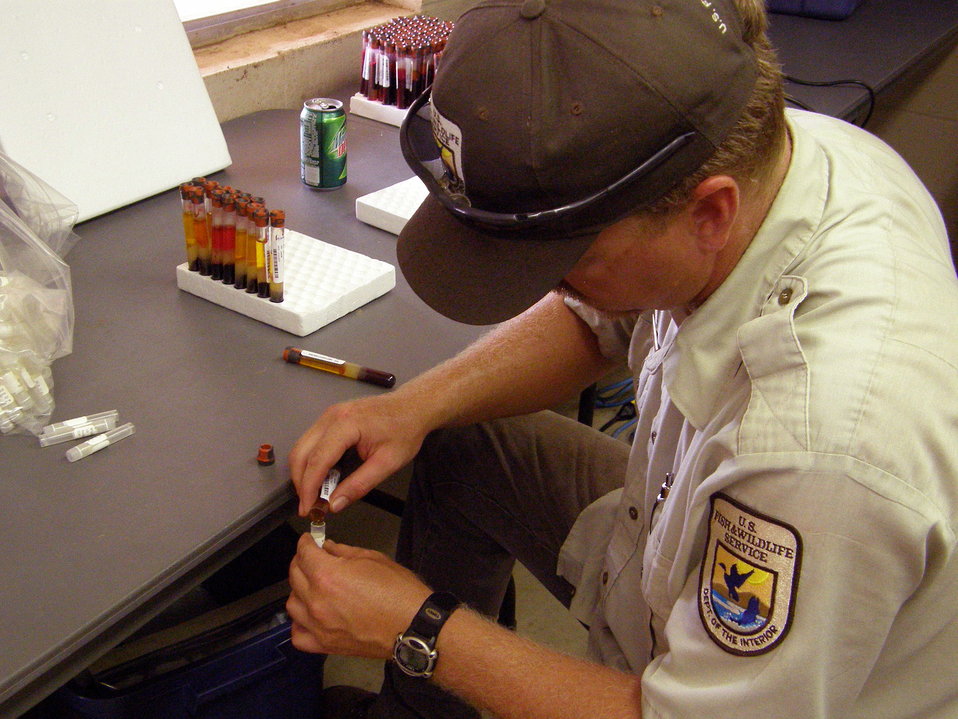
Pouring Serum for Disease Testing

Biologist Walter Munsterman of Wichita Mountains NWR pours serum from a blood tube. Serum is submitted to diagnostic labs for disease testing, and the Wildlife Health Office maintains a serum archive for retrospective investigations of herd health.